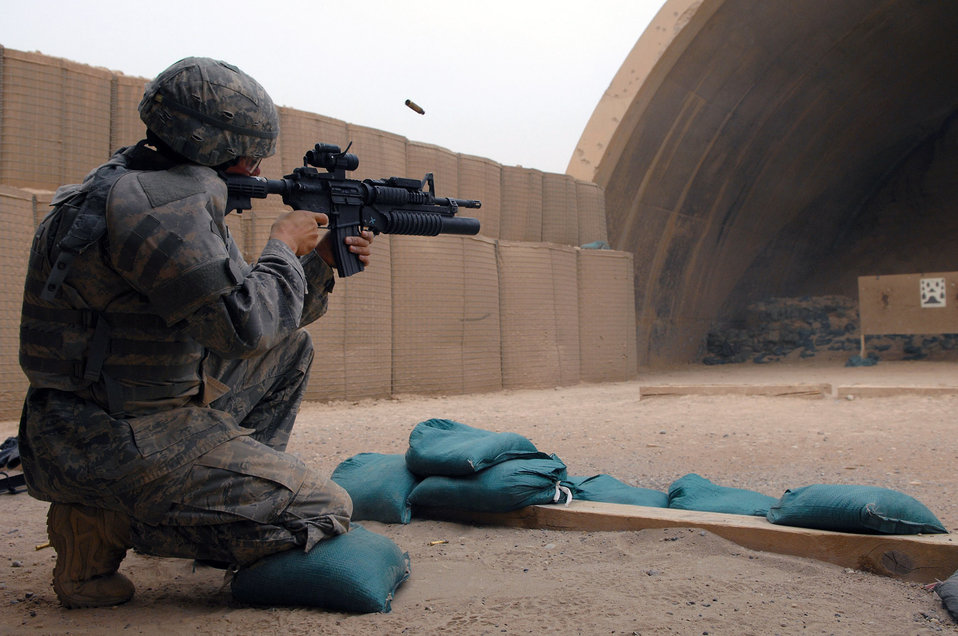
Zeroing in

Airman 1st Class Darryl Worthey shoots an M-4 at a silhouette target that simulates various distances April 30 at Balad Air Base, Iraq. By being completely comfortable and familiar with a weapon, reaction time during an emergency situation is more timely. Airman Worthey is assigned to the 332nd Expeditionary Security Forces Squadron deployed from Mountain Home Air Force Base, Idaho.